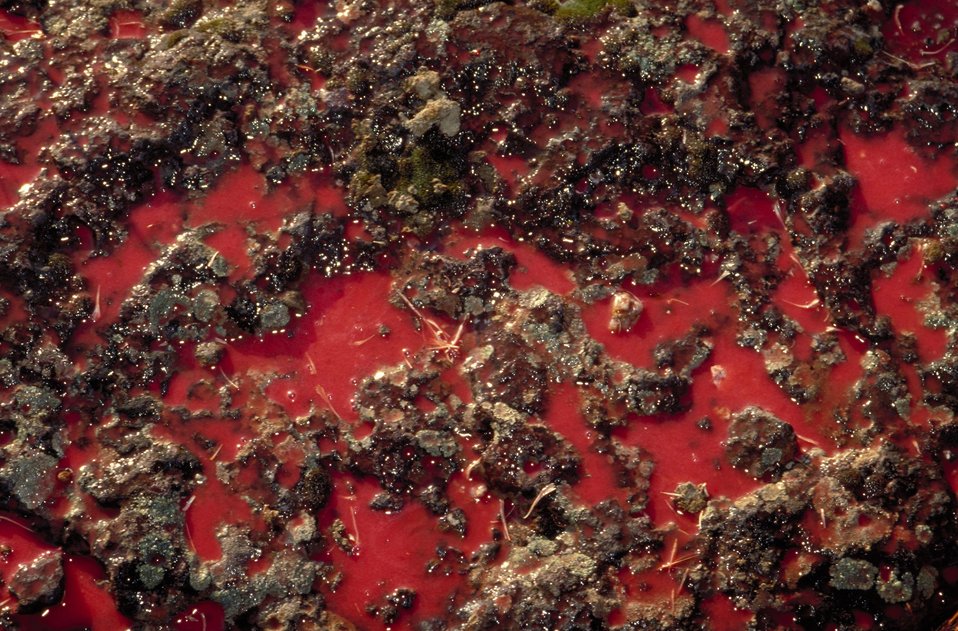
Retardant on ground Fire Season 2000 Lower Snake River District LSRD